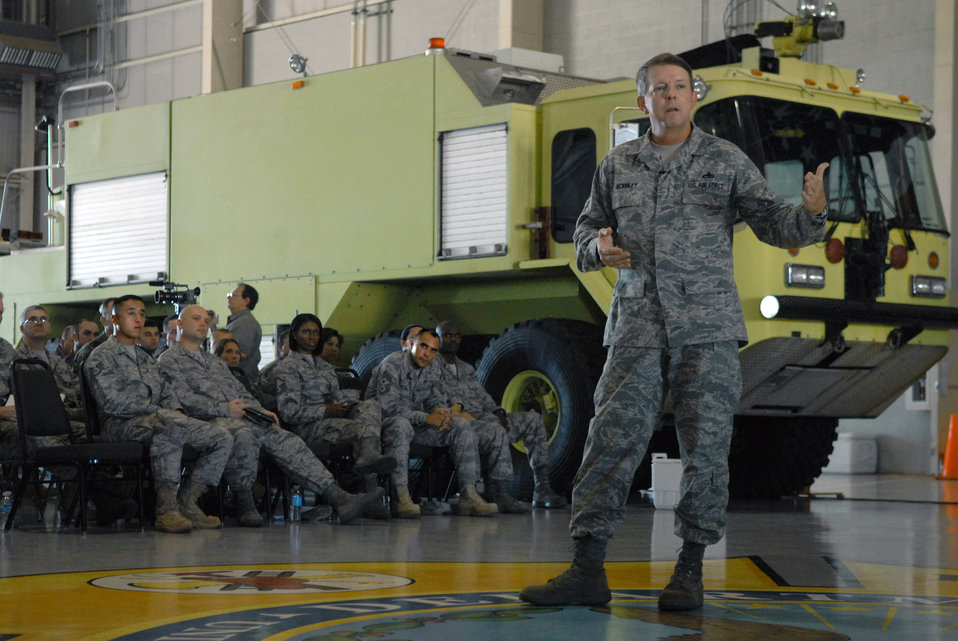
CMSAF talks about Air Force focus areas

Chief Master Sgt. of the Air Force Rodney J. McKinley discusses some of the Air Force focus areas with Airmen at Goodfellow Air Force Base, Texas, during an Airman's Call on the base Aug. 13.